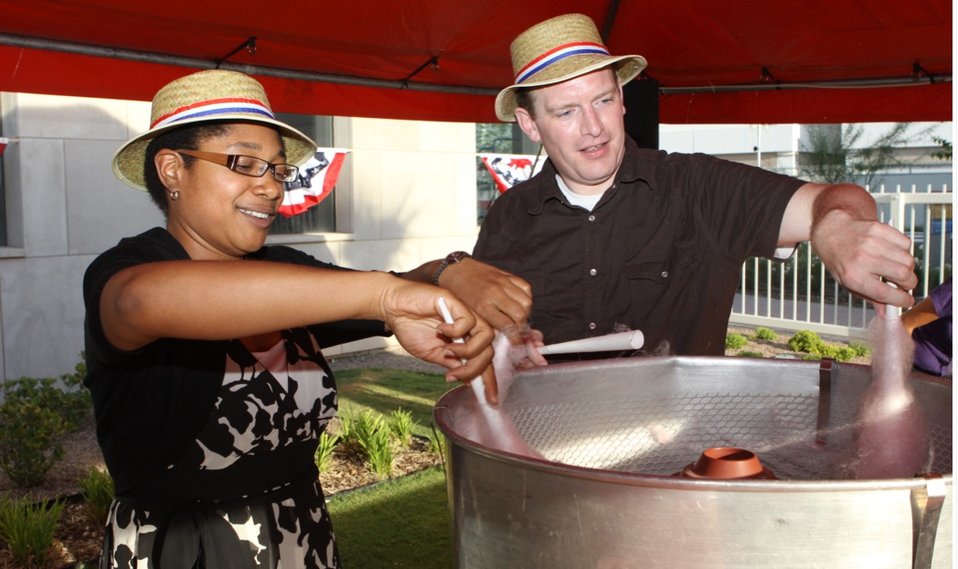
Consulate General in Ciudad Juarez Shows its Sweet Side

U.S. Consulate General in Ciudad Juarez shows its sweet side at the U.S. Independence Day celebration on June 25, 2010, in Ciudad Juarez, Mexico.